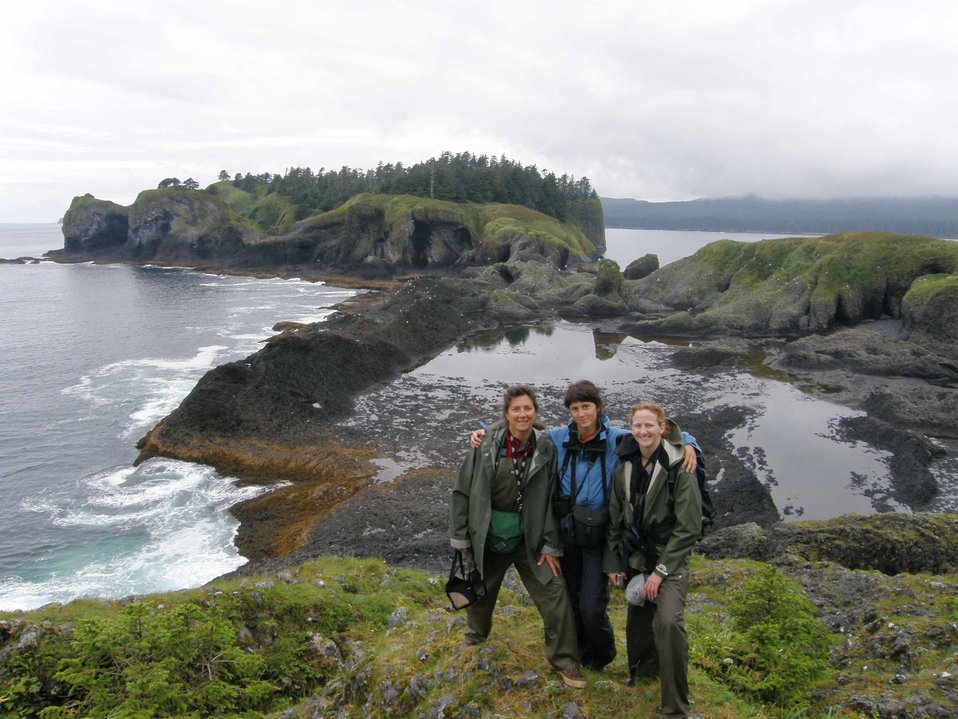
Elena Glazkova and Melissa, Karen 2008

Russian botanist studies impact of seabird colonies on vegetation of small marine islands in Alaska, 2008.